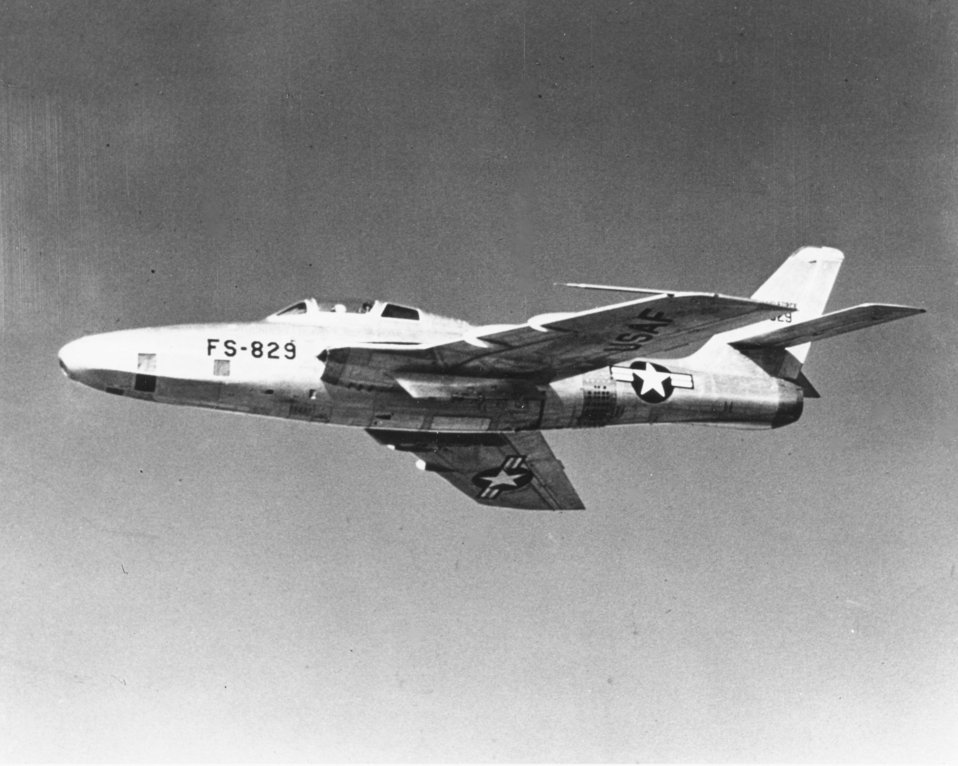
RF-84 Thunderflash

The RF-84